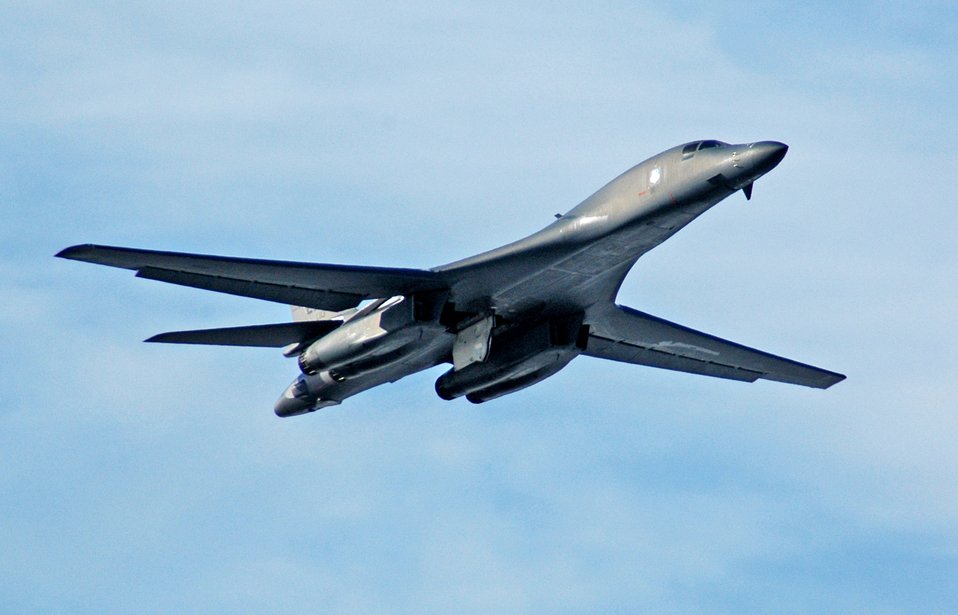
Red Flag-Alaska strengthens coalition forces

A B-1B Lancer from Ellsworth Air Force Base, S.D., takes off April 6 from Eielson AFB, Alaska, for a Red Flag-Alaska 07-1 orientation flight. Red Flag-Alaska enables aircrews to practice large-scale combat missions. The exercises are conducted on the Pacific Alaskan Range Complex, with air operations flown out of Eielson and nearby Elmendorf AFB. .